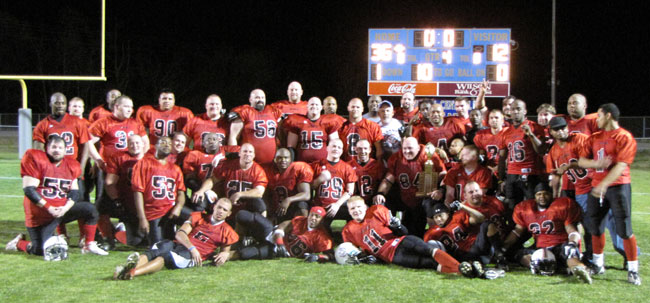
A team photo of the Lebanon Hitmen. Taken by House06, uploaded in April 2009